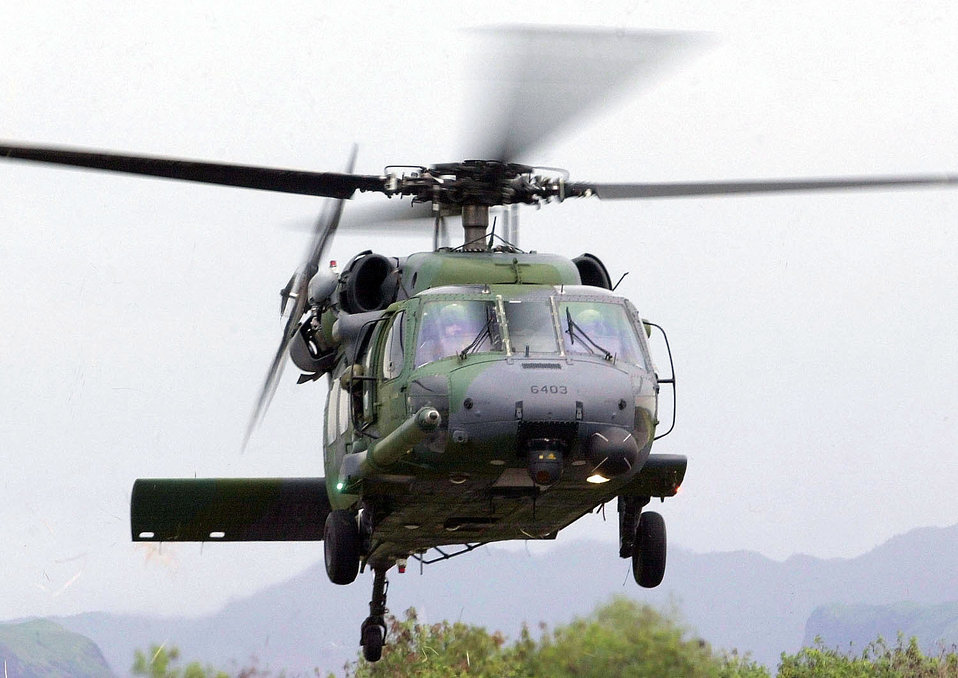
Air Evac

BASA AIR BASE, Philippines -- An HH-60G Pave Hawk helicopter from the 33rd Rescue Squadron, Kadena Air Base, Japan, lands here to evacuate